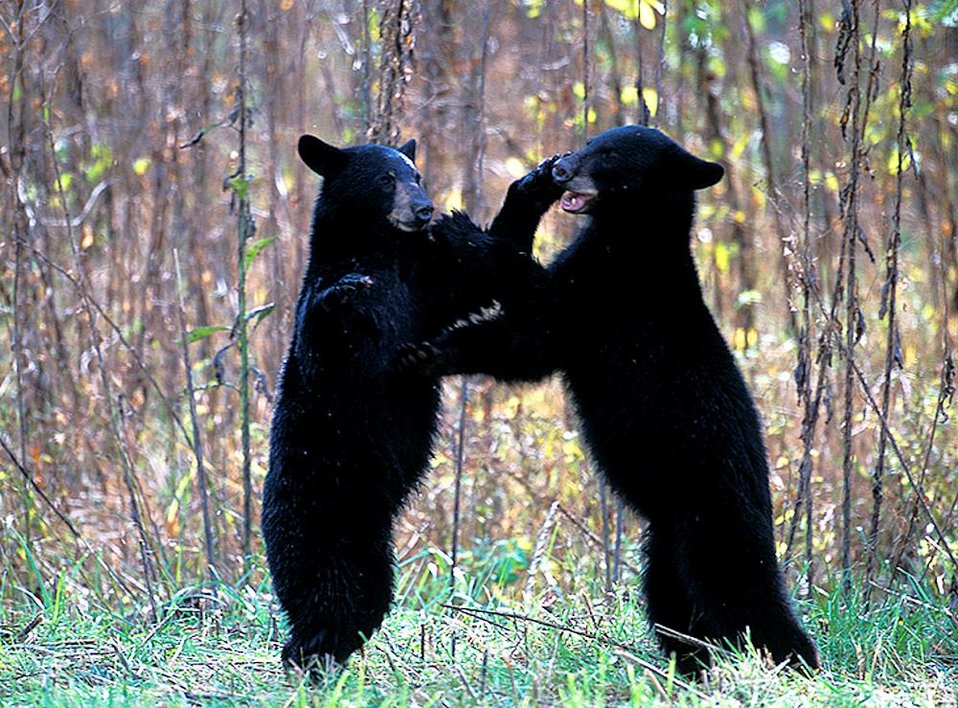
bear cubs